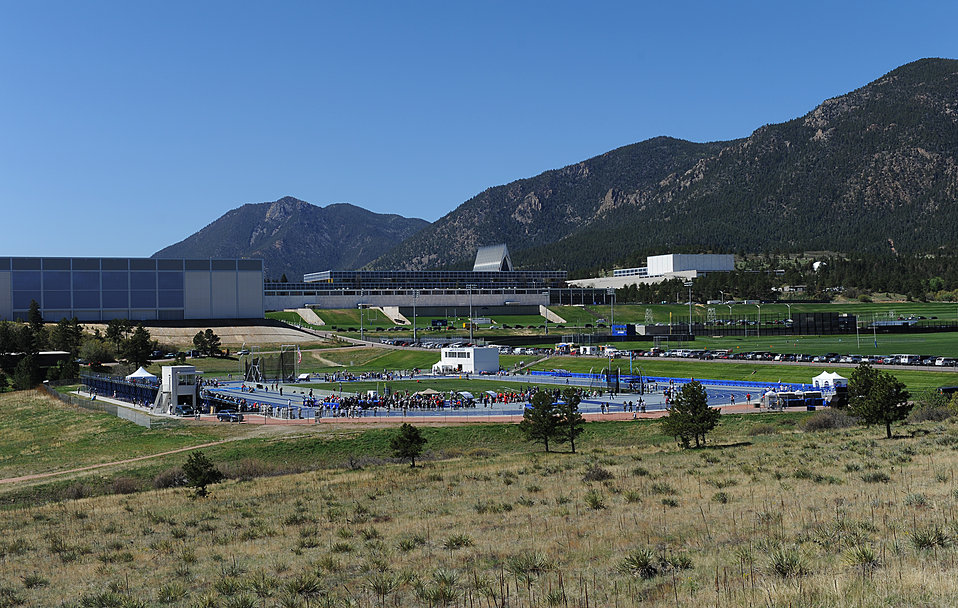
Warrior Games

Athletes take part in a track and field competition during Warrior Games 2012 at the U.S. Air Force Academy in Colorado Springs, Colo., May 4, 2012.